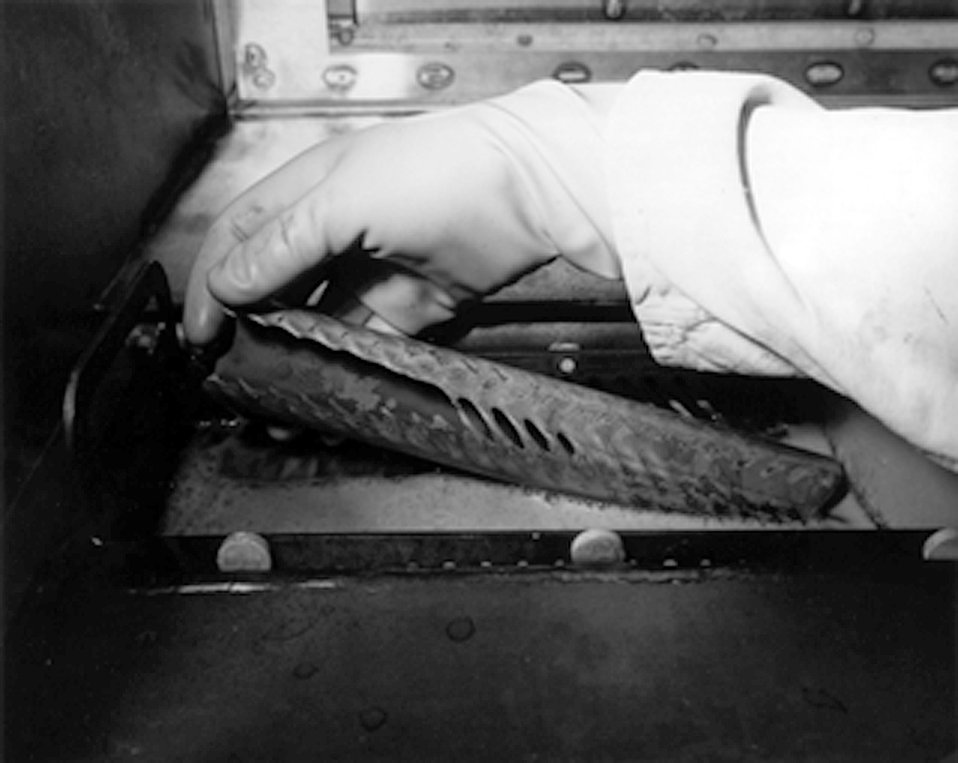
A new electrolytic dissolve process developed at the National Reactor Testing Station in Idaho permits faster, more economical reprocessing of stainless steel clad reactor fuels. Circa 1971.